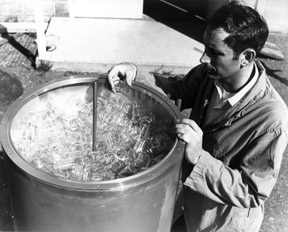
Glass crashing rings can be used as a method of preventing an accidental chain reaction as the result of critically experiments at the Pacific Northwest Laboratory have shown. c. 1971